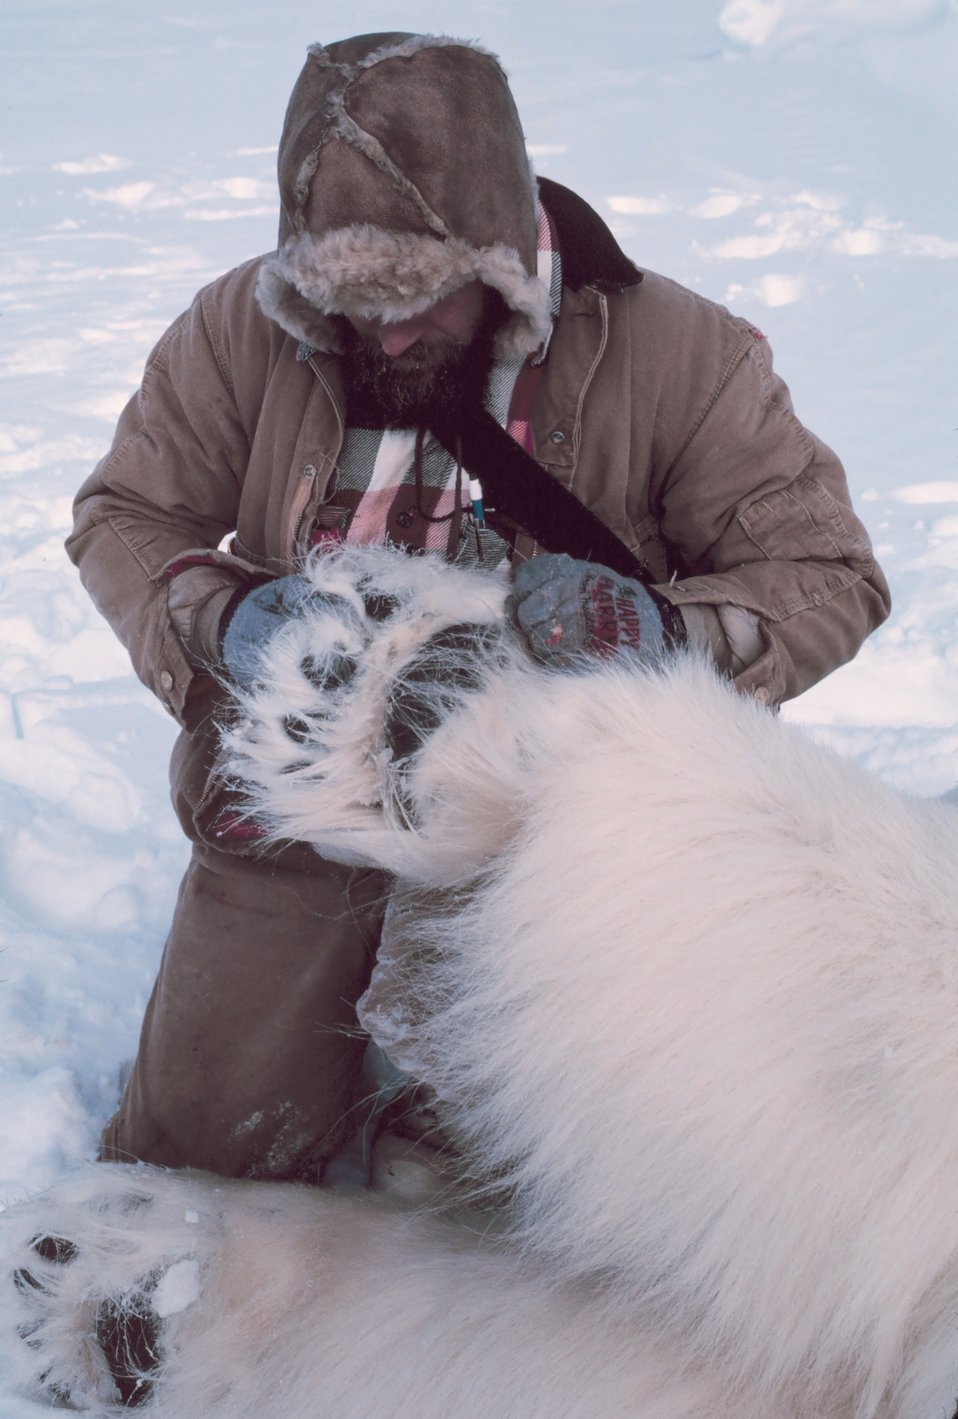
Large sedated polar bear - Ursus maritimus. Large padded feet for traction on the ice.